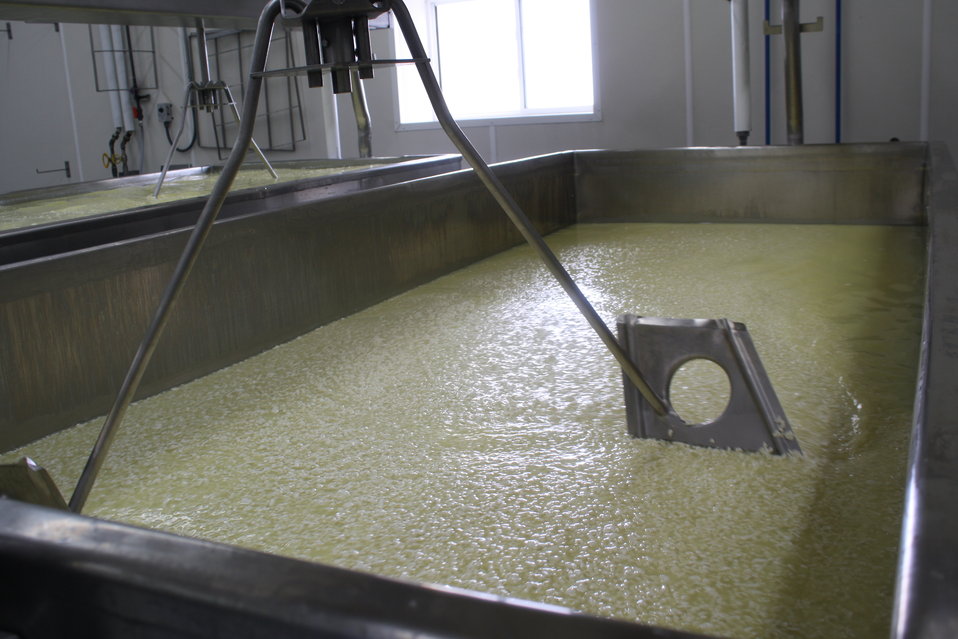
Agriculture Under Secretary for Rural Development (RD) Dallas Tonsager visited the Wisconsin Farmers Union Specialty Cheese Company in Montfort, WI on Mar. 1, 2013. The WI Farmers Union Specialty Cheese Company facility adds value to the output of surrounding Wisconsin dairy farms.